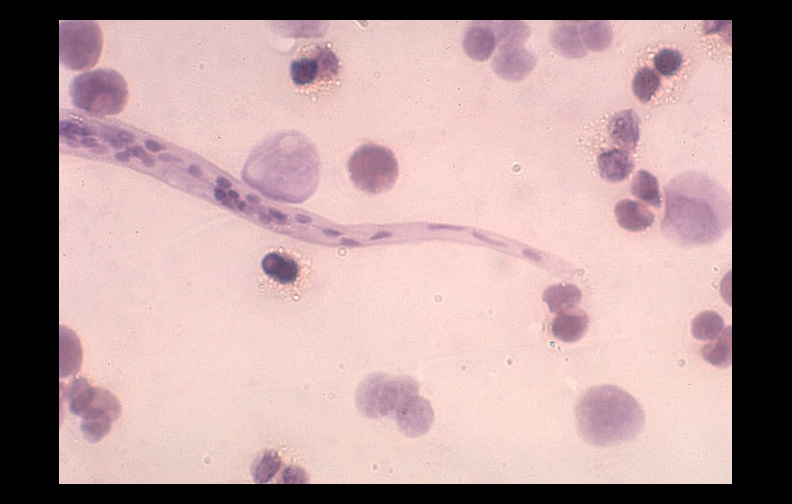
Loa loa, posterior end; Agent of filariasis.